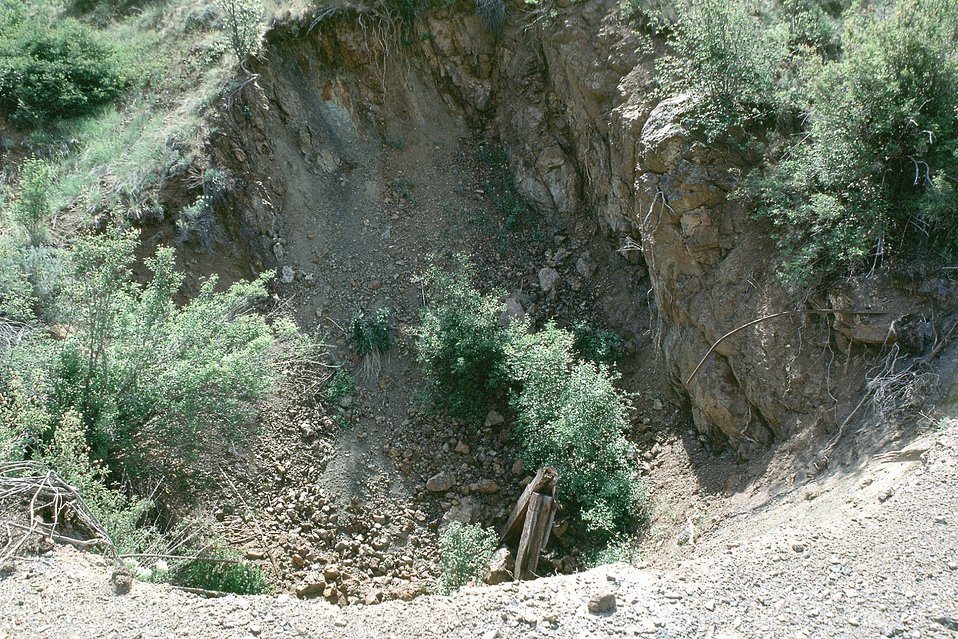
AML Poorman, Vale District, Oregon. entrance to mine shaft.